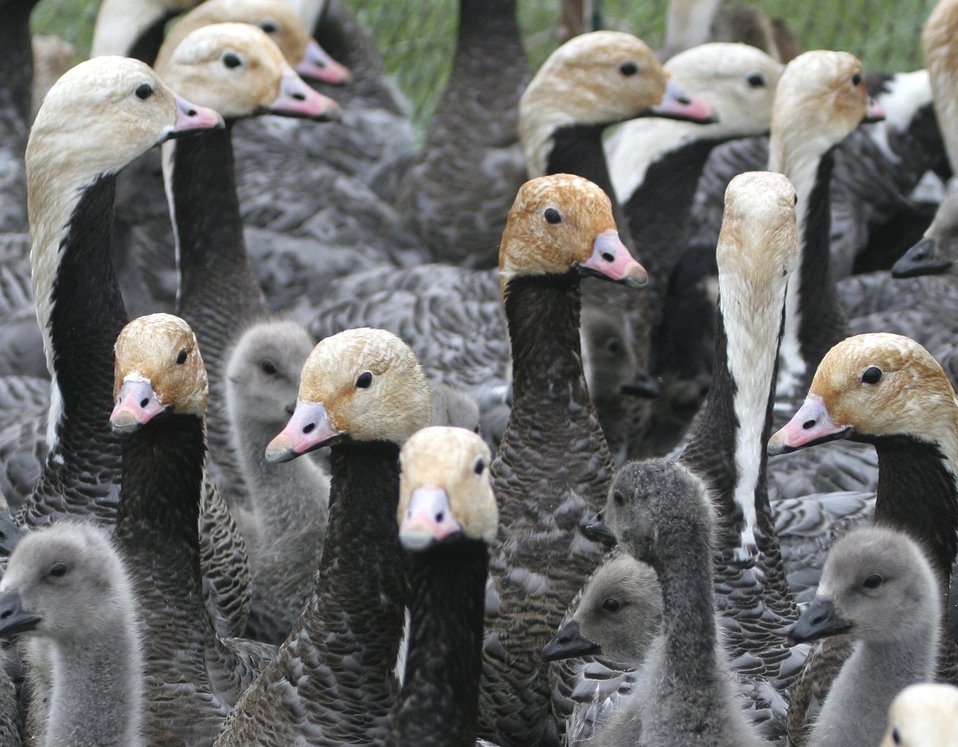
Emperor Goose Round-up

Photo was taken while birds were captured for banding, Yukon Delta NWR.